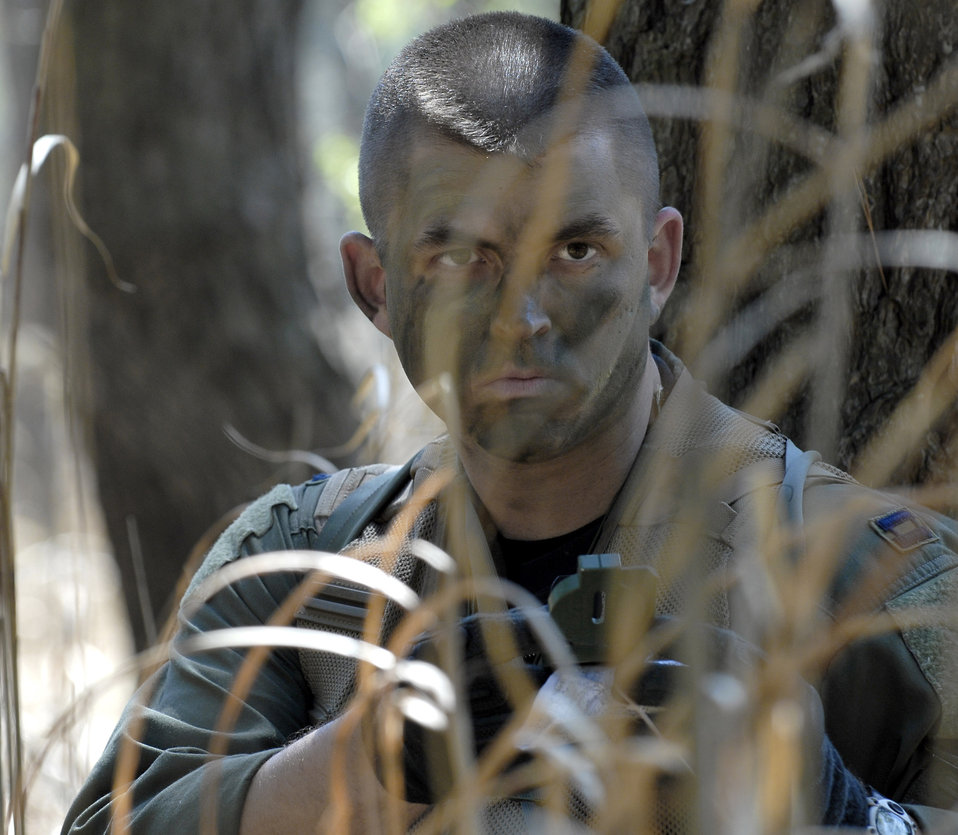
Shhhhhhhhhhh

Capt. Shane Willis stops, looks and listens April 22 during Beverly Bearcat 09-03, part of an operational readiness inspection at Osan Air Base, South Korea. Captain Willis is assigned to the 25th Fighter Squadron there.